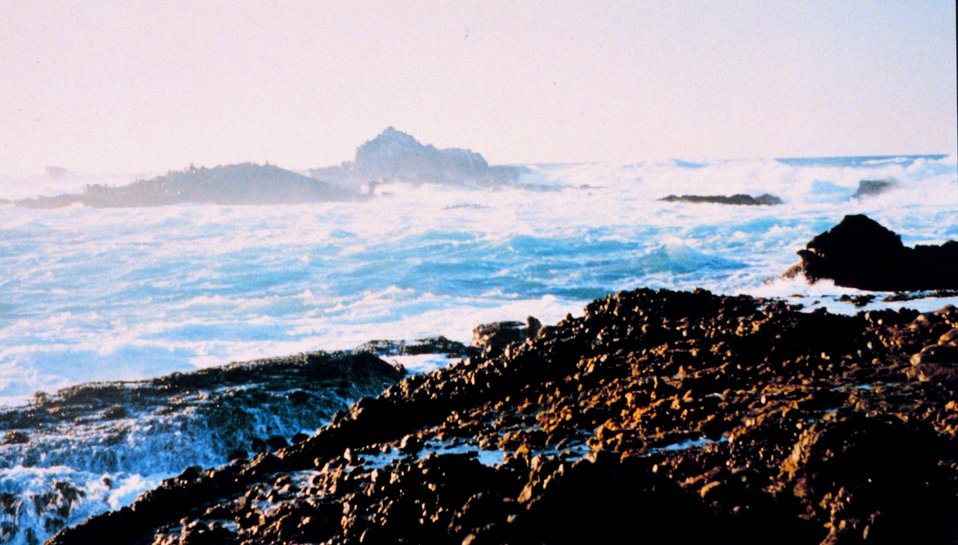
Surf, rock, and spray define Point Lobos.